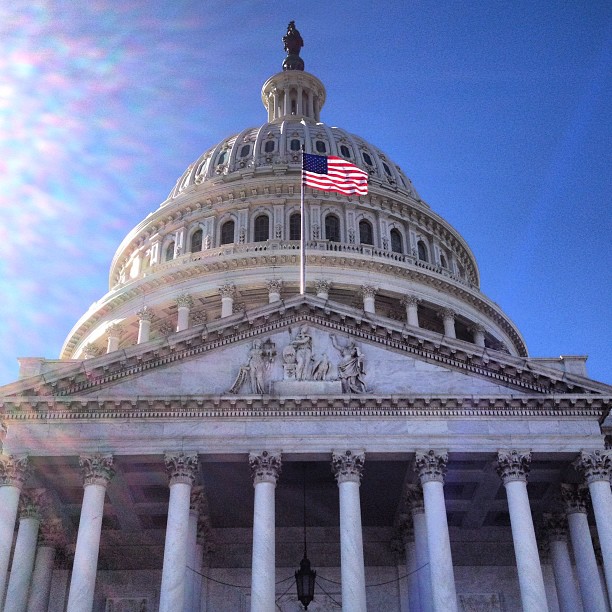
Capitol Dome on a beautiful Friday afternoon in #dc.